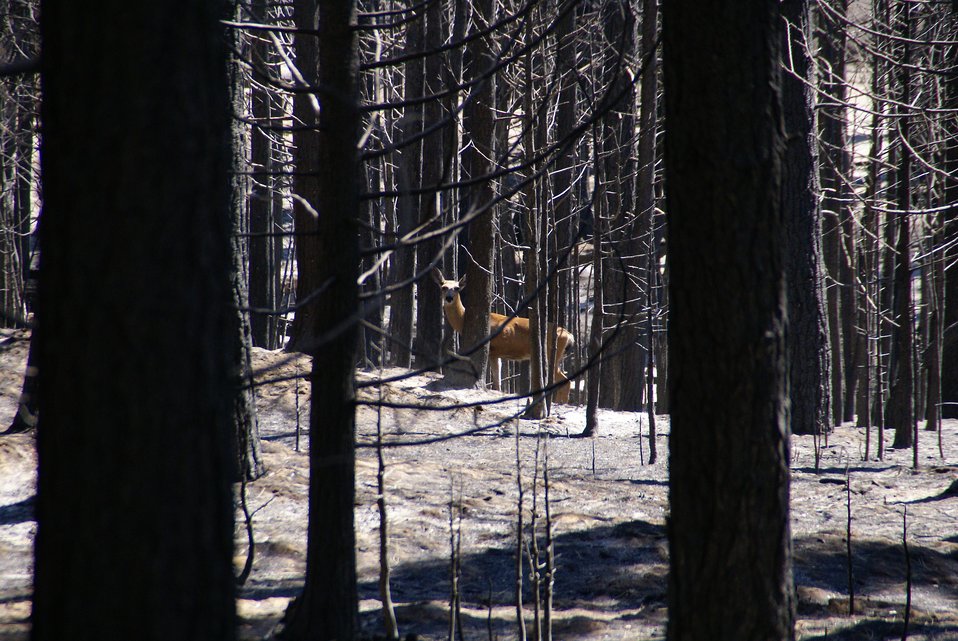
A doe deer returns to its’ home range along the Cherry Lake Road at the Rim Fire. The Rim Fire in the Stanislaus National Forest near in California began on Aug. 17, 2013 and is under investigation. The fire has consumed approximately 256,169 acres and is 84% contained.